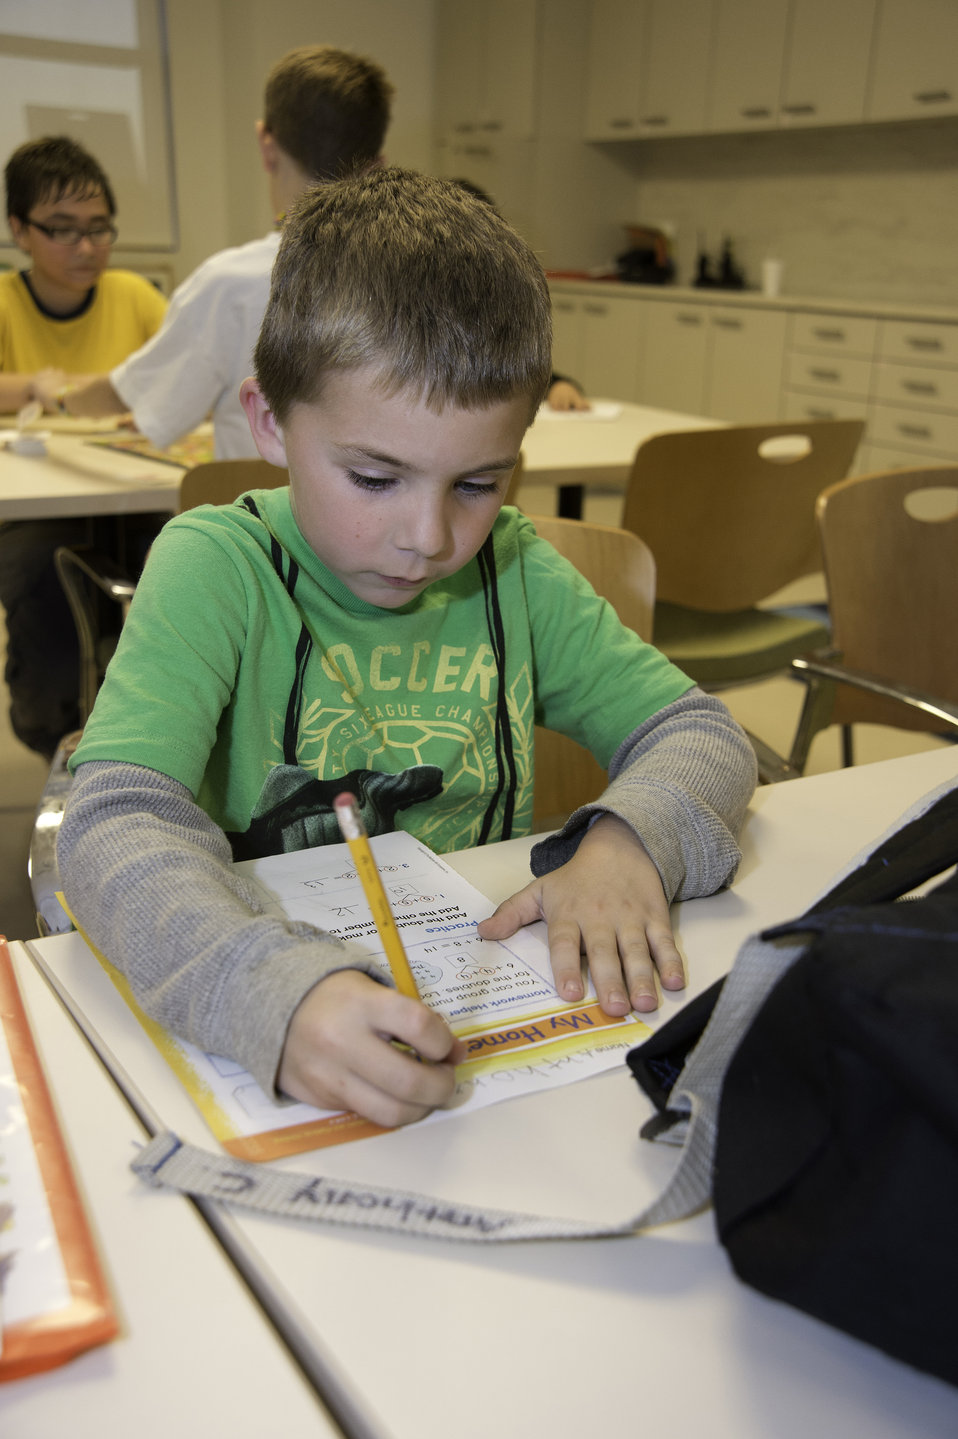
Mohegan youth enrolled in after-school program work on their schoolwork and receive extra help at the Mohegan Tribe Community Center and Government Building in Uncasville, CT on Nov. 18, 2013. A U.S. Department of Agriculture (USDA) Rural Development (RD) Community Facility Loan was provided to the Mohegan Tribe for the construction of the Mohegan Tribe Community Center and Government Building in Uncasville, CT. USDA’s RD Community Facilities Programs makes and guarantees loans to develop essential community facilities in rural areas and towns of up to 20,000 in population. Loans and guarantees are available to public entities such as municipalities, counties, parishes, boroughs, and special-purpose districts, as well as to non-profit corporations and tribal governments. The 160,000 square foot building Center hosts an exhibit celebrating federal recognition, history of Mohegan Chiefs, a new Library and Archives space, new Arts and Crafts room, a new gymnasium, and a new community room to enjoy food and family. The Center will continue the Tribe’s plan for growth and meeting the needs of its members.